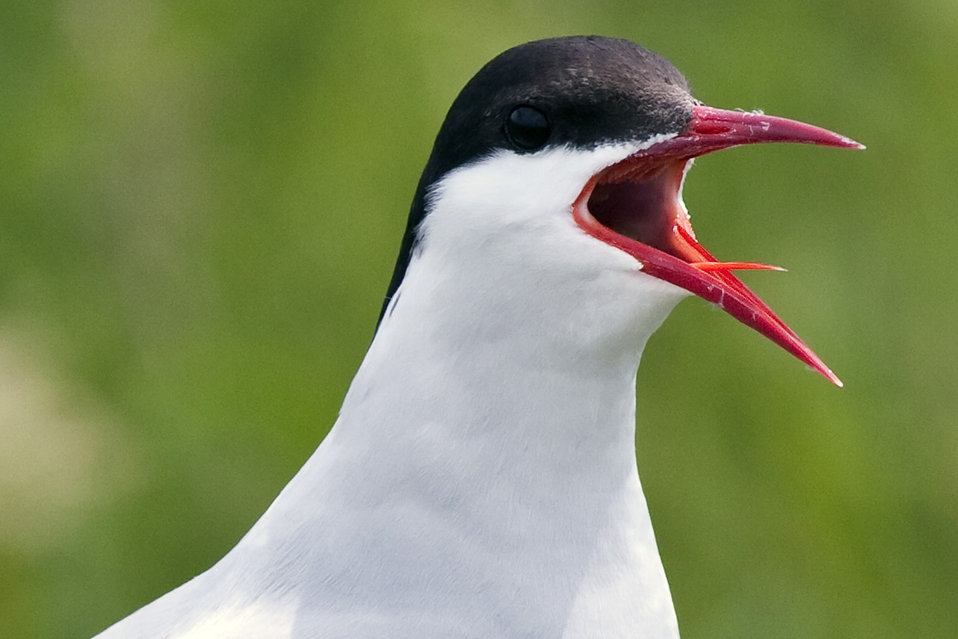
Arctic Tern

Petit Manan Island, Maine Coastal Islands NWR. Summer with the Seabirds blog: mainecoastalislands.wordpress.com/2010/08/01/terns/